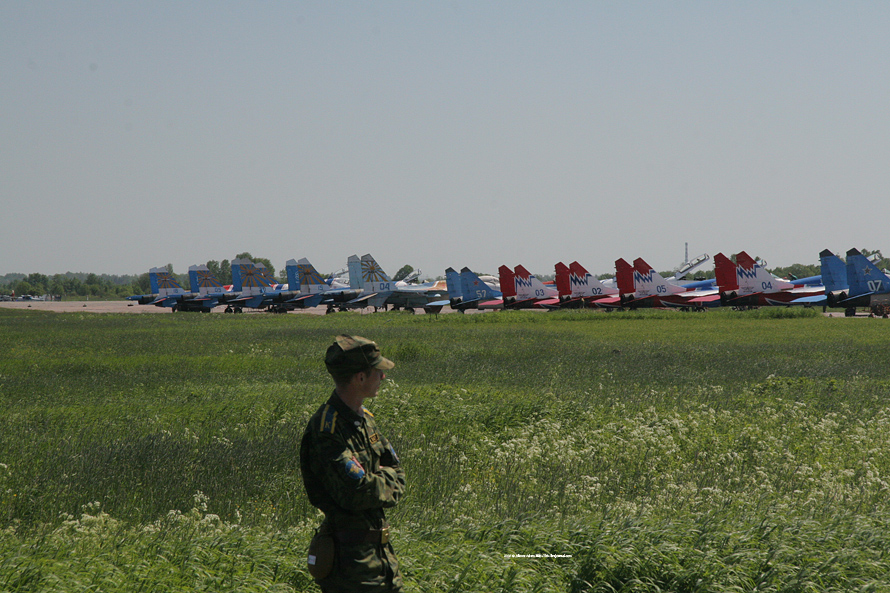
Pushkin Airport is an airport in en:Leningrad Oblast, en:Russia located 28 km south of en:Saint Petersburg. It handles small airliners. It was home to 147 OVZ RZB regiment flying en:Mi-8 helicopters and contains en:Il-18, en:Il-22, and en:Il-38 aircraft. Location: 59°41′6″N 030°20′18″E / 59.685°N 30.33833°E / 59.685; 30.33833